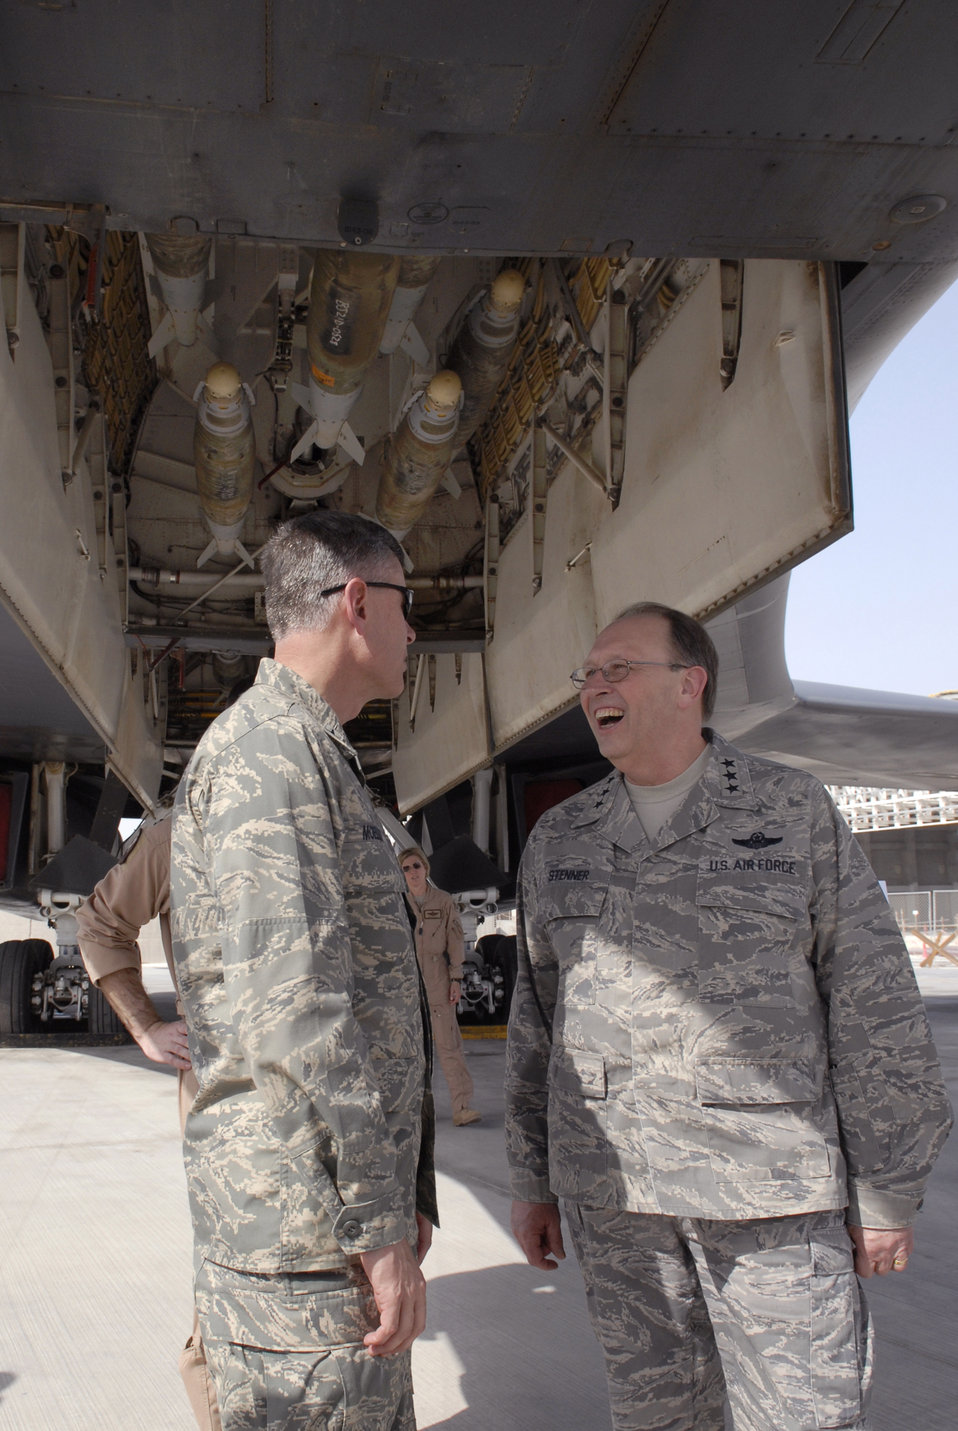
Reserve commander meets with deployed reservists

Brig. Gen. Michael Moeller (left), commander of the 379th Air Expeditionary Wing, speaks with Lt. Gen. Charles Stenner April 6 while looking over the business end of a B-1B Lancer at an air base in Southwest Asia. General Stenner is commander of Air Force Reserve Command and chief of the Air Force Reserve. He visited many areas of the base and numerous Reserve Airmen who are deployed here.